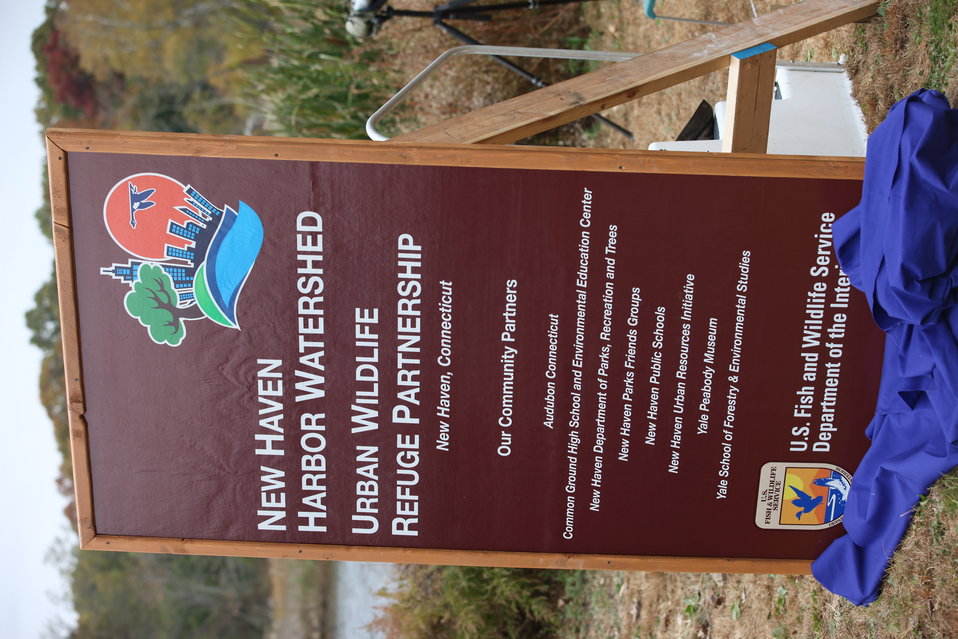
New Haven Harbor Watershed Urban Wildlife Refuge Partnership

On October 30, 2013, the U.S. Fish and Wildlife Service designated the Urban Oases project in the New Haven Harbor Watershed as an urban wildlife refuge partnership. The designation is under the Service's Urban Refuge Initiative which grows out of the 2011 Conserving the Future vision, which sets a strategic path for the National Wildlife Refuge System for the next ten years and beyond.